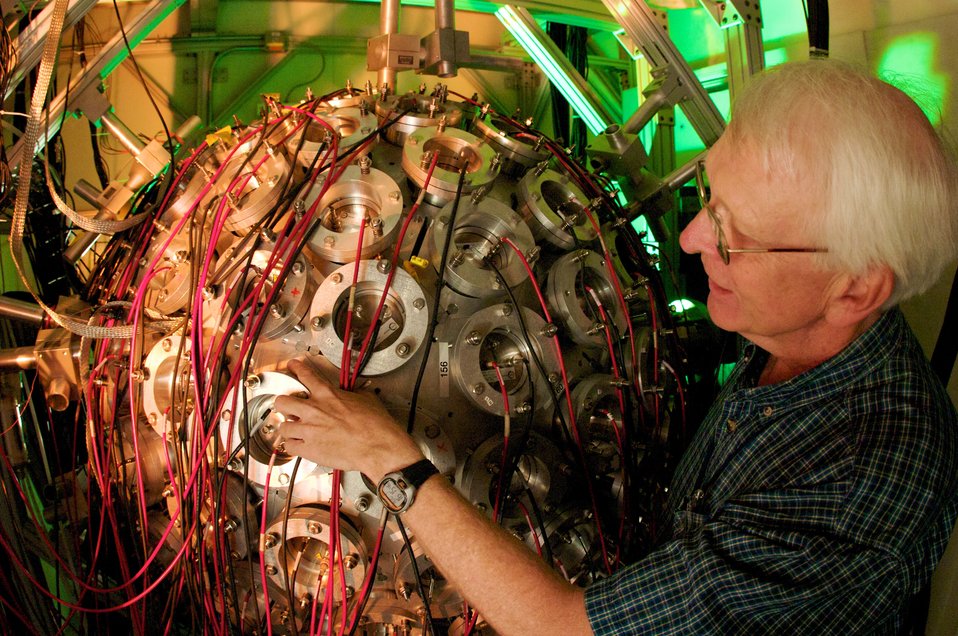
JOHN ULLMAN WITH THE DETECTOR FOR ADVANCED NEUTRON CAPTURE EXPERIMENTS, A MULTIDISCIPLINARY INSTRUMENT DESIGNED TO STUDY NEUTRON CAPTURE REACTIONS ON SMALL QUANTITIES OF RADIOACTIVE OR REAR STABLE NUCLEI.

The Los Alamos Neutron Science Center (LANSCE) is the signature experimental science facility at Los Alamos National Laboratory, underpinning the laboratory as a world- class scientific institution. LANSCE is a national resource that supports basic and applied research for national security and civilian applications.